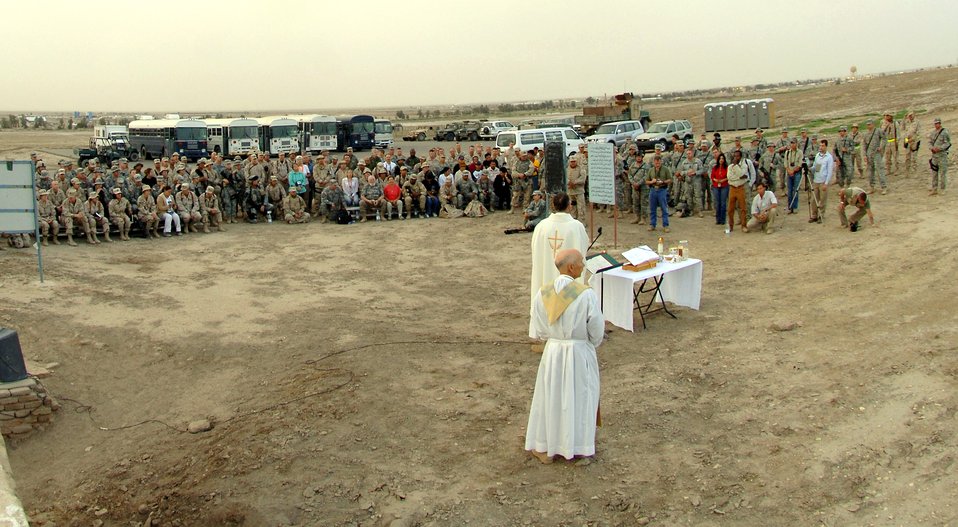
Easter services in an ancient land

Troops from Ali Base, Iraq, attend Easter services at the House of Abraham in the ancient city of Ur, Iraq, on Sunday, April 16, 2006. Abraham is considered by religious scholars to be the father of three religions: Islam, Judaism and Christianity.